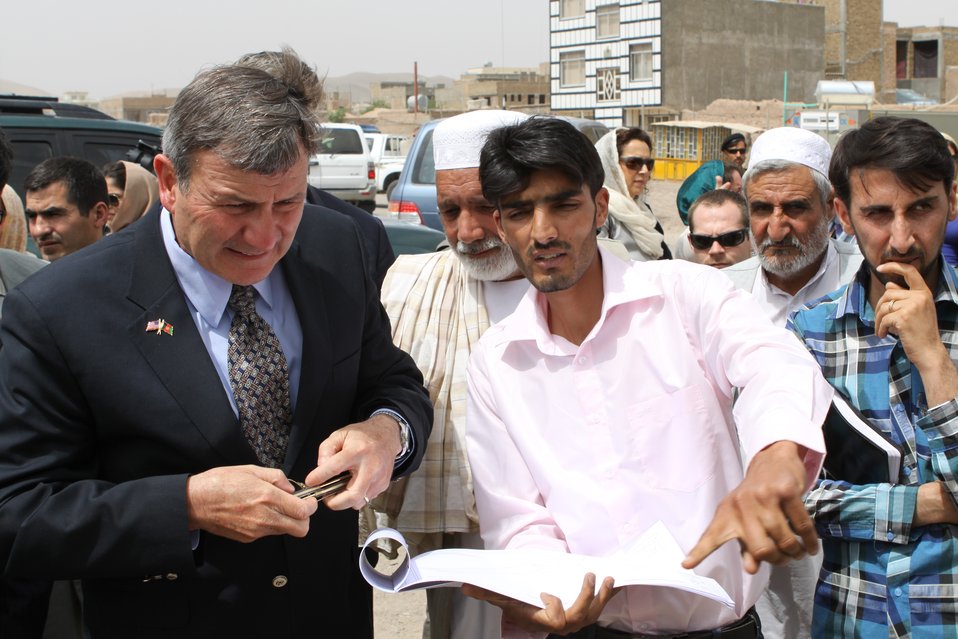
100525 Hirat Marble Conference 611